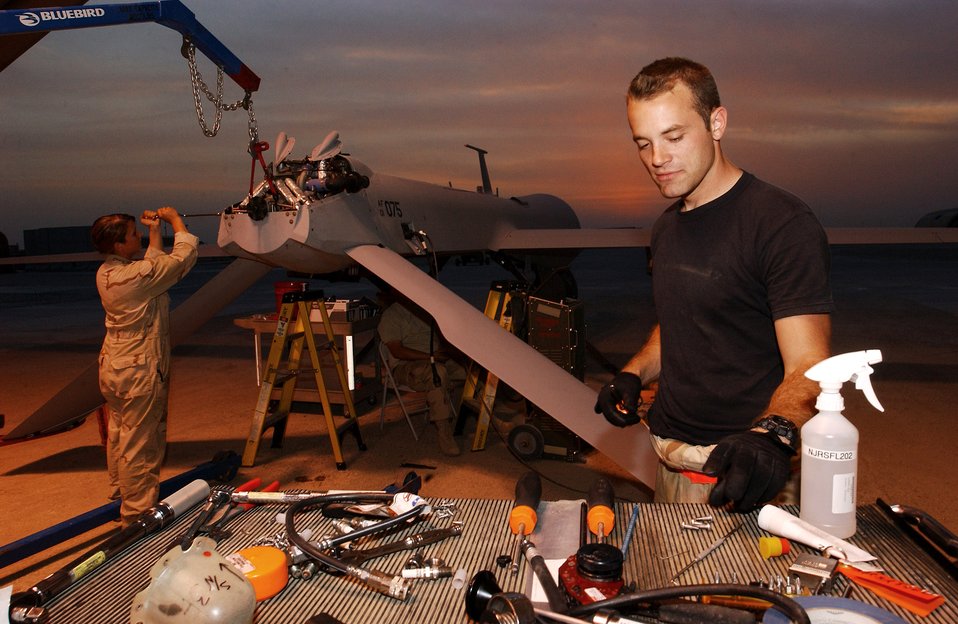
Making the Predator hum

Senior Airman Valerie Santa (left) and Airman 1st Class Justin Cole work on the engine of an MQ-1 Predator unmanned aerial vehicle Nov. 16 at Ali Base, Iraq.